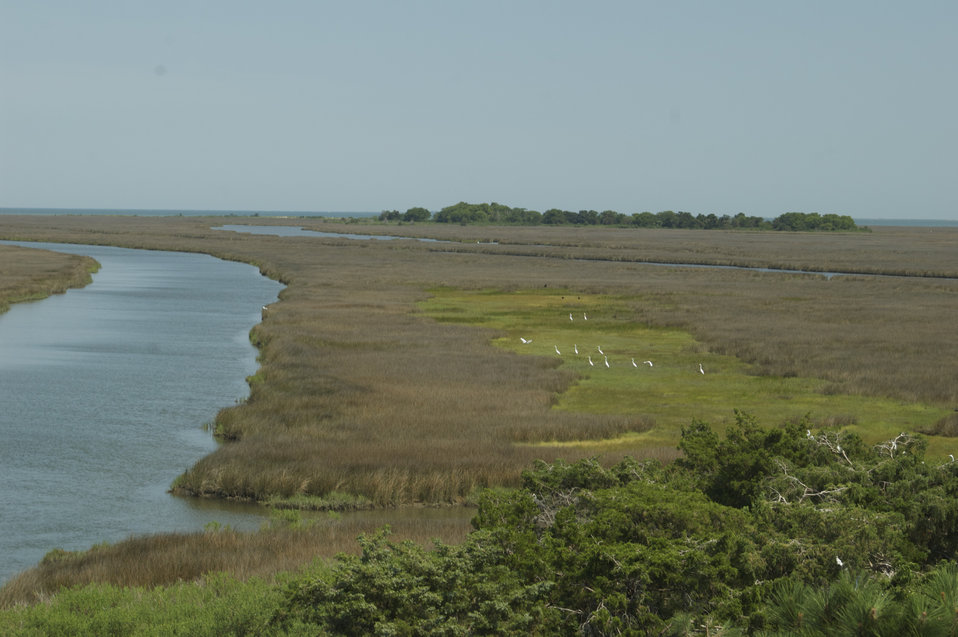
Joes Ridge Creek with Chesapeake Bay in the distance

Photo was taken from the lookout tower on Martin National Wildlife Refuge.